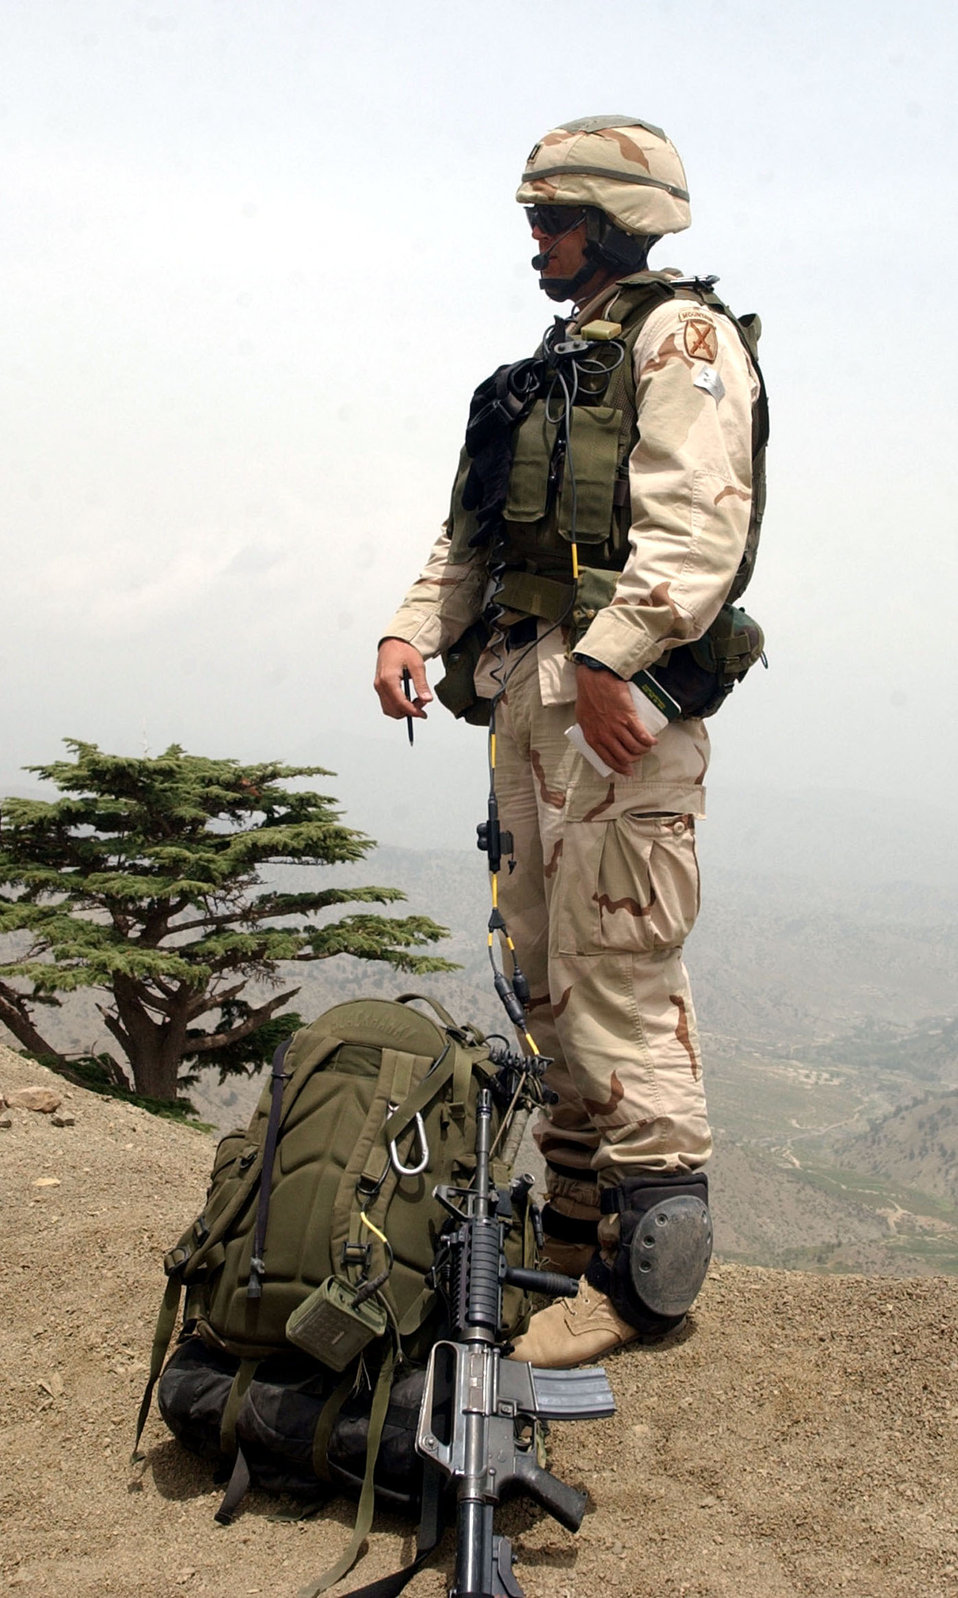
Break time

OPERATION ENDURING FREEDOM -- Capt. Danny Stout, an air liaison officer deployed with the Army's 2-505 Parachute Infantry Regiment of the 82nd Airborne Division, takes a much-needed break during a classified mission in the mountains of Afghanistan. Stout, a B-52 Stratofortress pilot serving a two-year tour with the Army, keeps his eyes in the skies for hours at a time to control coalition aircraft on close-air support missions.